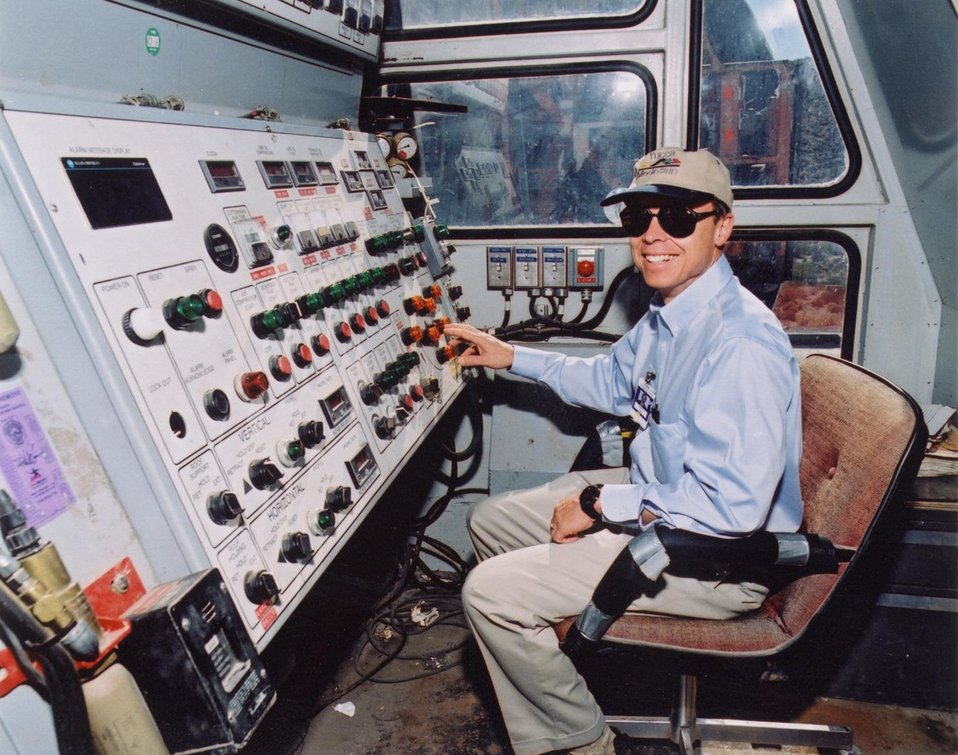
UNDER SECRETARY OF ENERGY ROBERT CARD VISITS YUCCA MOUNTAIN ON JULY 26, 2001.

UNDER SECRETARY CARD TOURED THE SITE WHICH FOR OVER 20 YEARS HAS BEEN UNDERGOING TESTS TO DETERMINE ITS SUITABILITY AS THE NATION'S FIRST REPOSITORY FOR HIGH LEVEL NUCLEAR WASTE. STUDIES INCLUDE WEATHER PATTERNS OF THE AREA, SURFACE TESTING OF ROCK, SOIL SAMPLES AND WATER MOVEMENT, AS WELL AS SUBSURFACE ROCK TESTING AT DEEP LEVELS AND LABORATORY ANALYSIS OF SAMPLES.